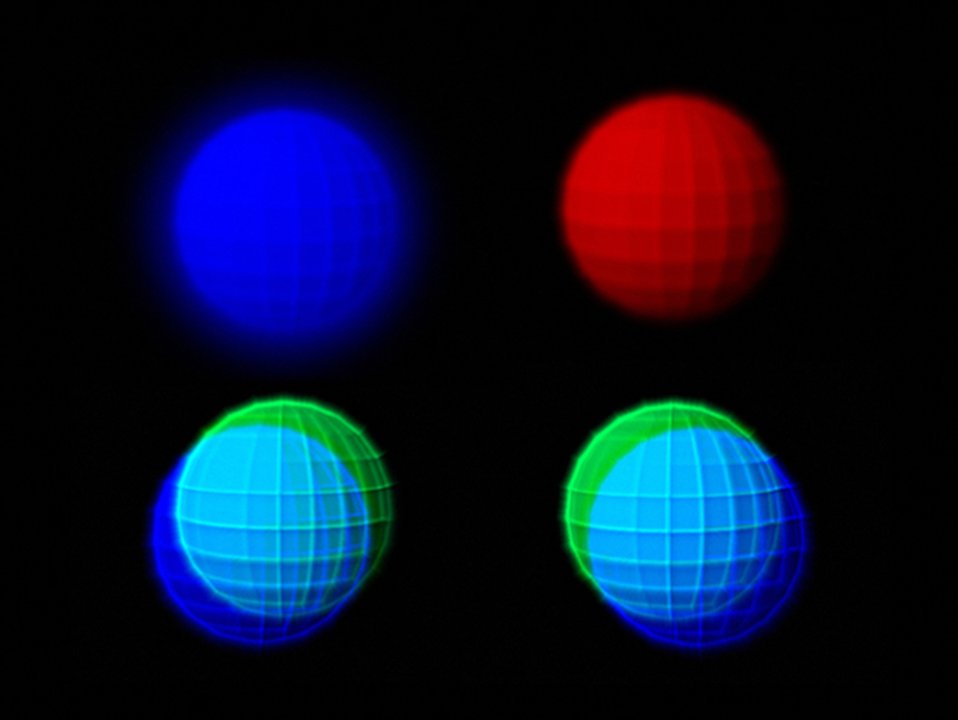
NIST Physicists Boost Entanglement of Atom Pairs

The NIST process for 'purifying' an unusual property of quantum physics called entanglement involves illuminating two pairs of beryllium ions (charged atoms) with a series of ultraviolet laser pulses.

See also www.nist.gov/pml/div688/purification.cfm

Credit: Bill Pietsch, Astronaut 3 Media